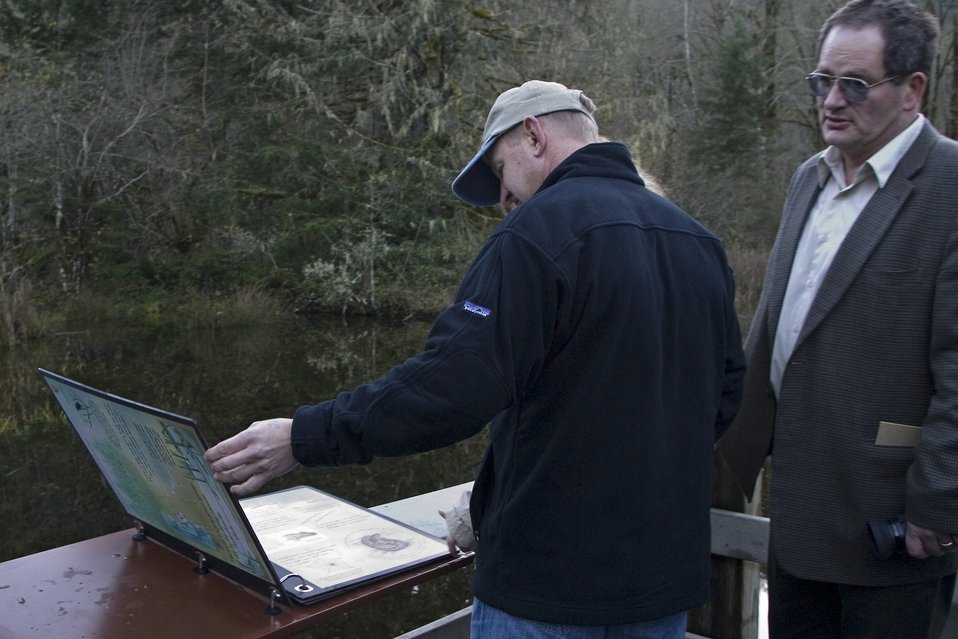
Alexander Chistyakov, Vice-Governor of Kamchatka listens as a Russian translator describes an interpretive display along the Wetland Boardwalk Trail at BLM's Wildwood Recreation Site.